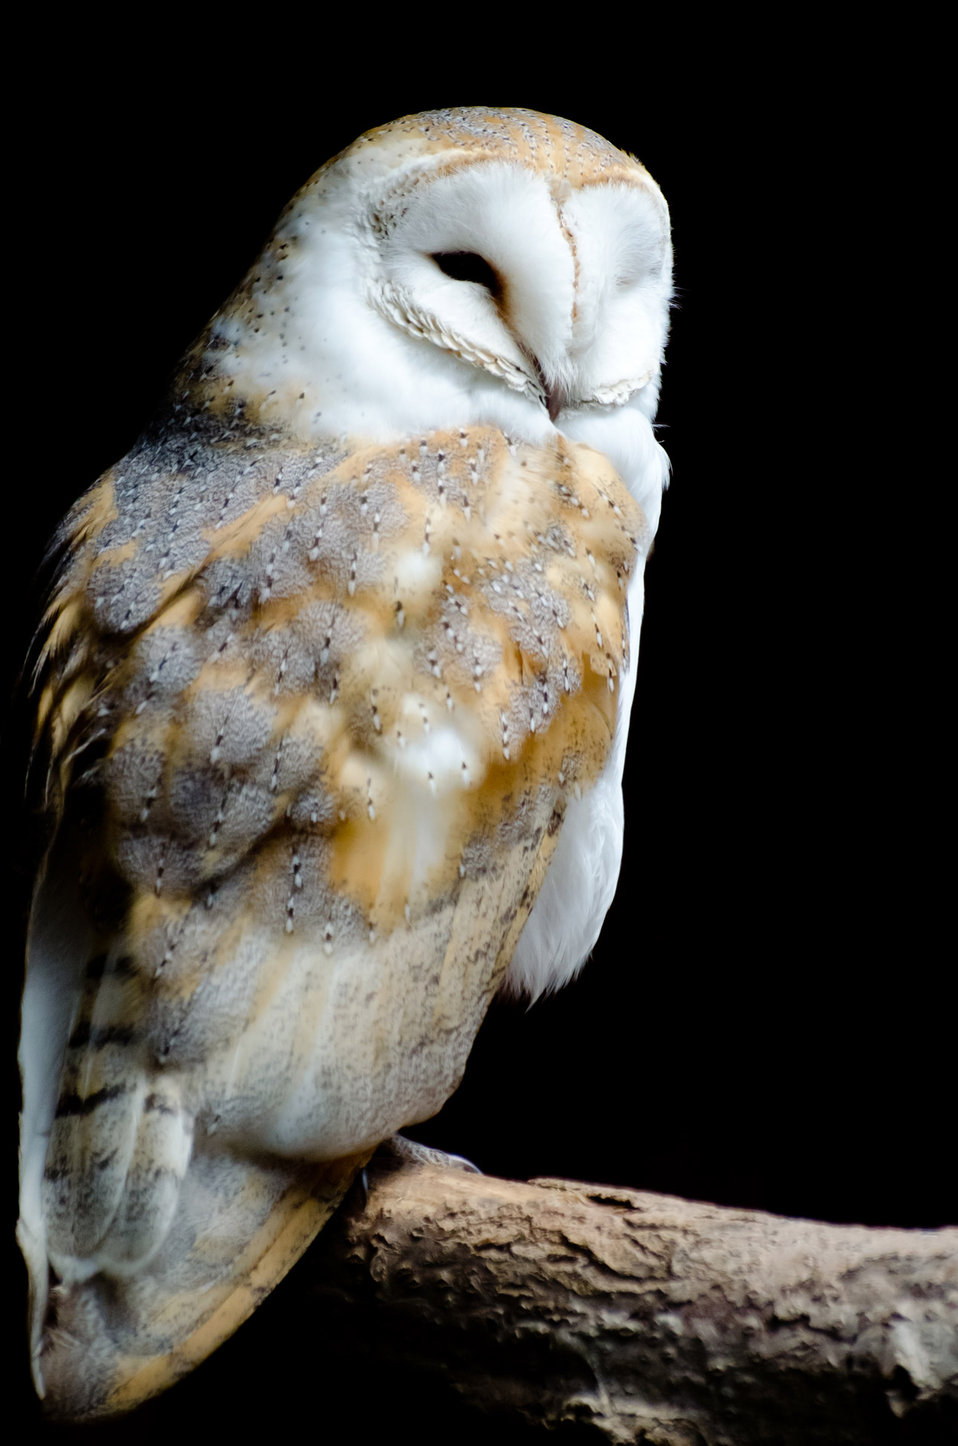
Barn owl on the black background

Barn owl - tyto alba - bird.